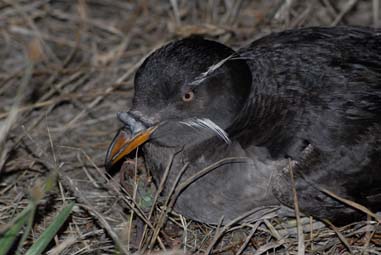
Rhinoceros auklet - Protection Island NWR

Protection Island lies in the Strait of Juan de Fuca and is home to 17,000 pairs of nesting Rhinoceros auklets.